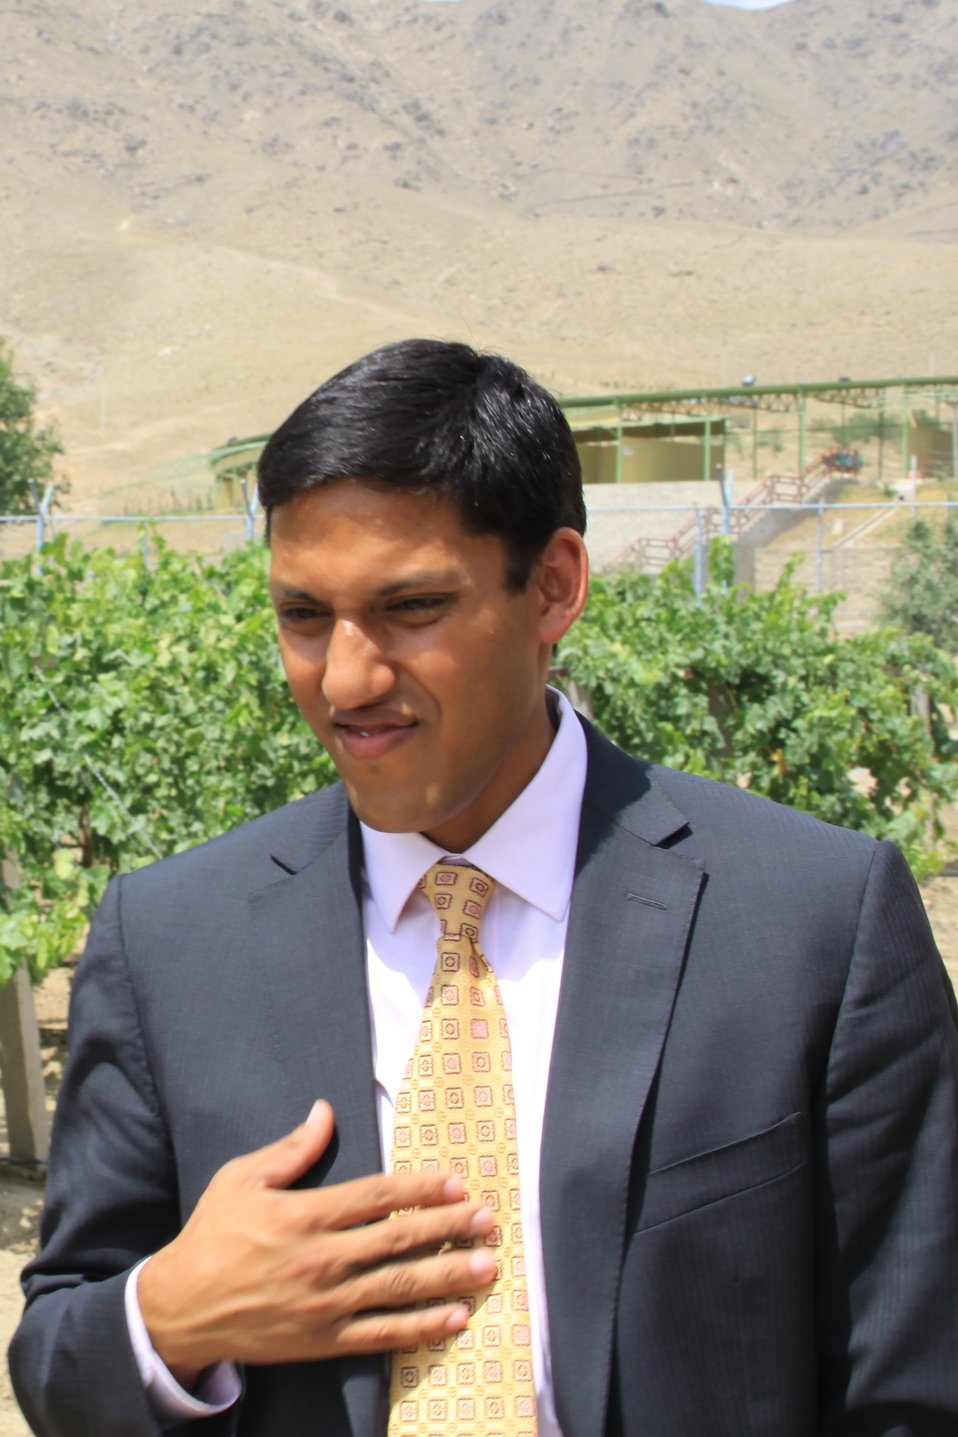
Badam Bagh Farm